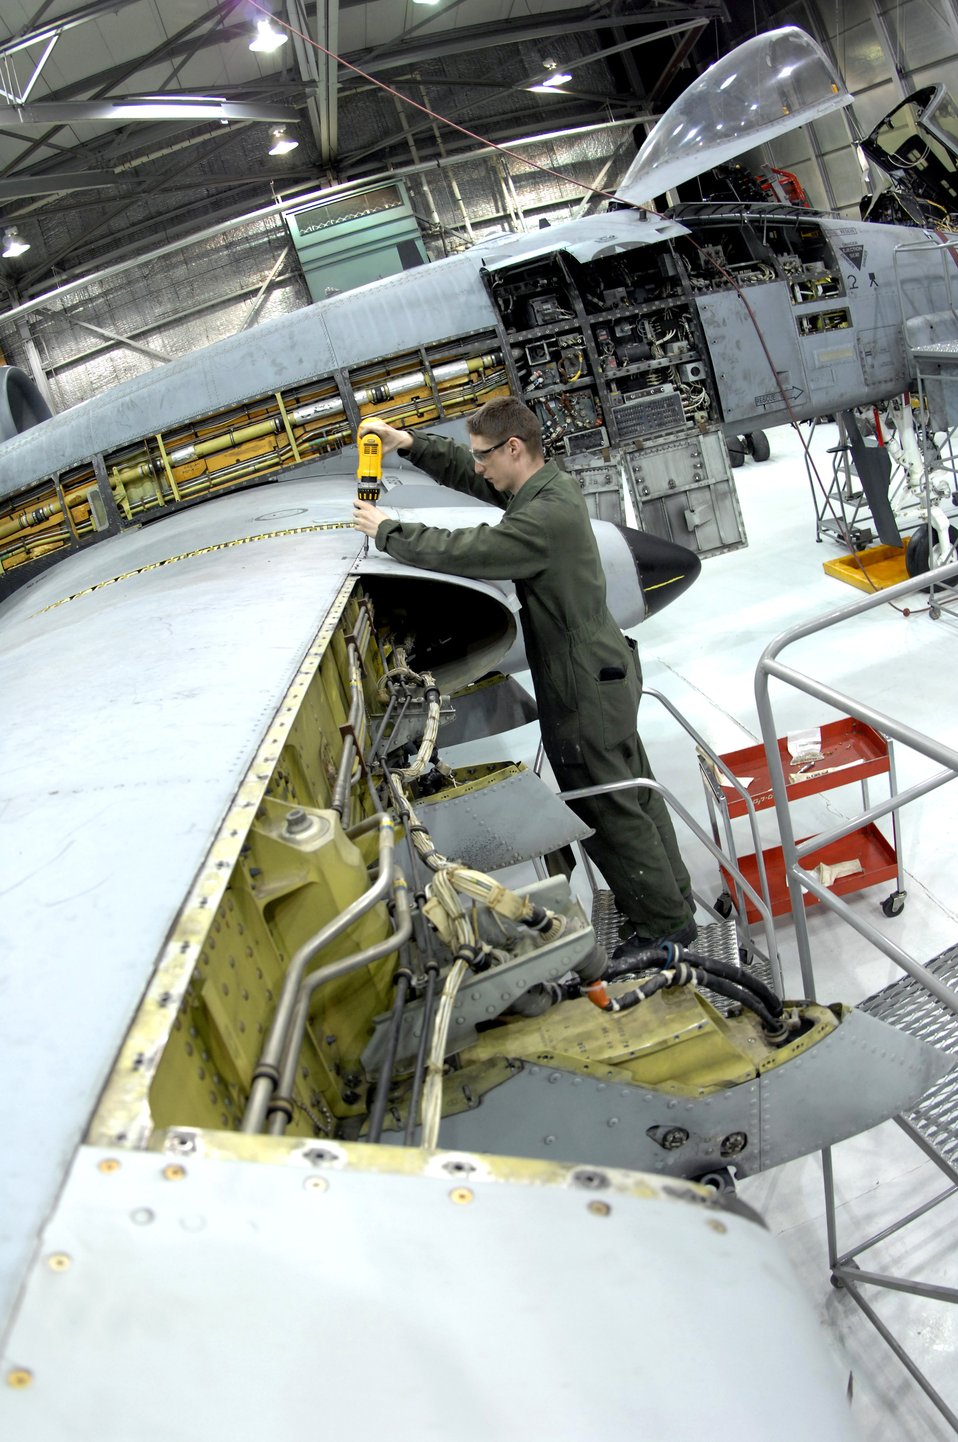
It's just a phase they're going through

Airman 1st Class Mitchell Guy removes a leading edge panel on an A-10 Thunderbolt II March 13 during phase maintenance at Eielson Air Force Base, Alaska. During phase maintenance, Airmen overhaul the entire aircraft to ensure it is ready for safe flight. Airman Guy and the other maintainers in the 345th Aircraft Maintenance Squadron can turn an A-10 around in 10 days.